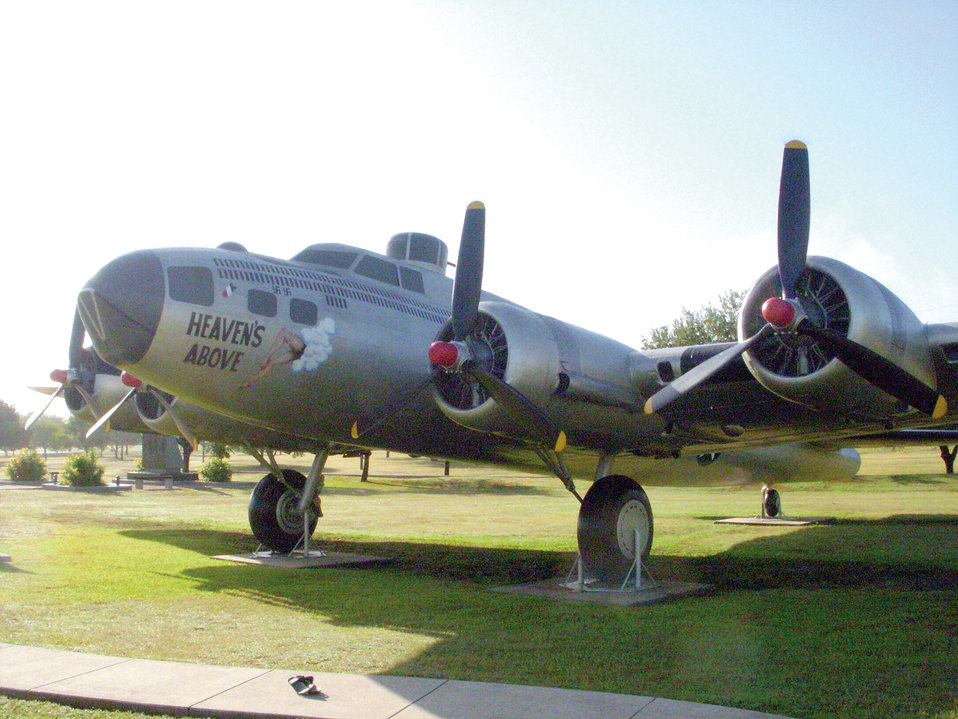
Airman finds piece of family history at Lackland

The